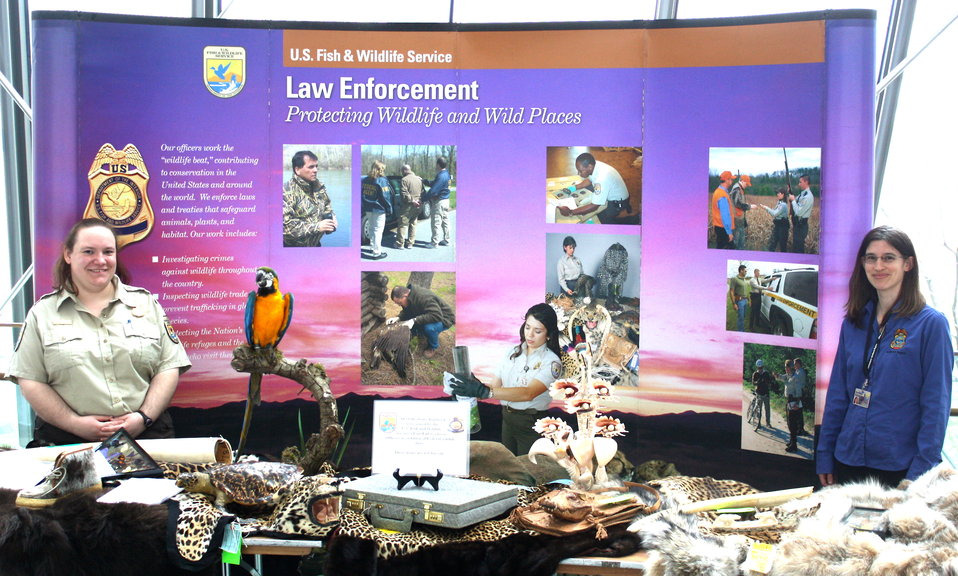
USFWS at Kid's Day